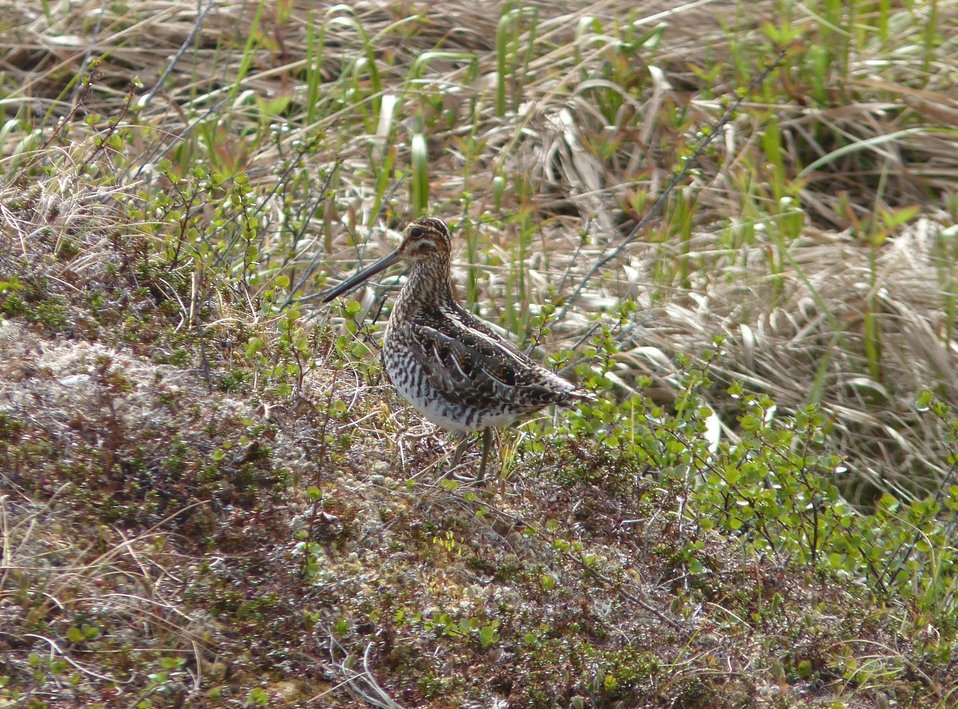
Wilson's snipe

Andreafsky wilderness, Yukon Delta National Wildlife Refuge